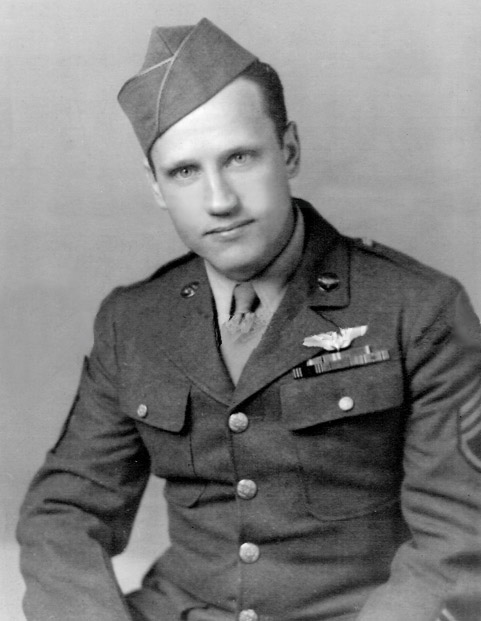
Member of famed 'Doolittle Raiders' dies

Staff Sgt. Jacob DeShazer, a member of the famed Doolittle Raiders, was the bombardier of Crew No.16 flying the